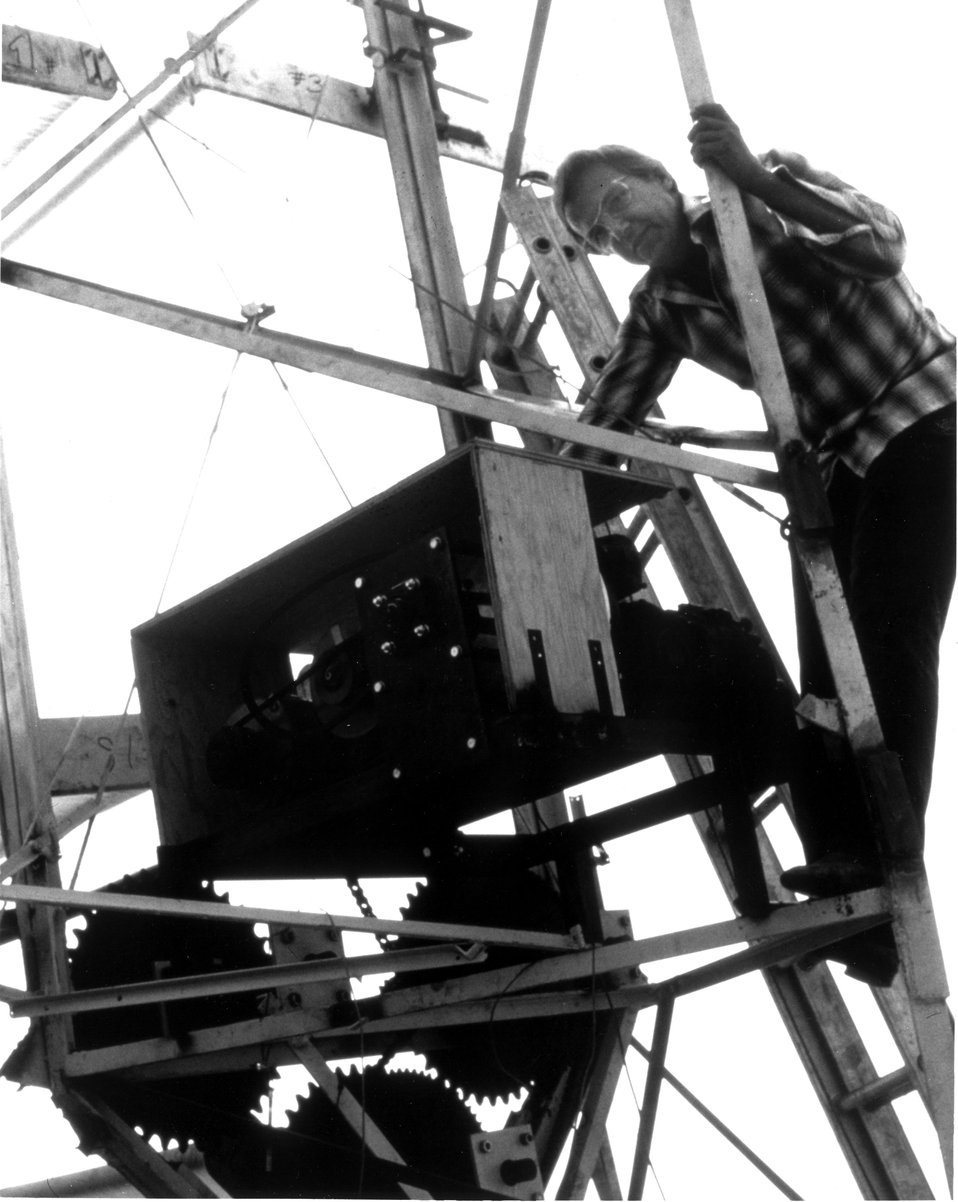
Wind energy machine, invented by Daniel Schneider of Irving, Texas, is being developed under a grant from the Department of Energy's (DOE) Energy-Related Inventions program. c. 1978